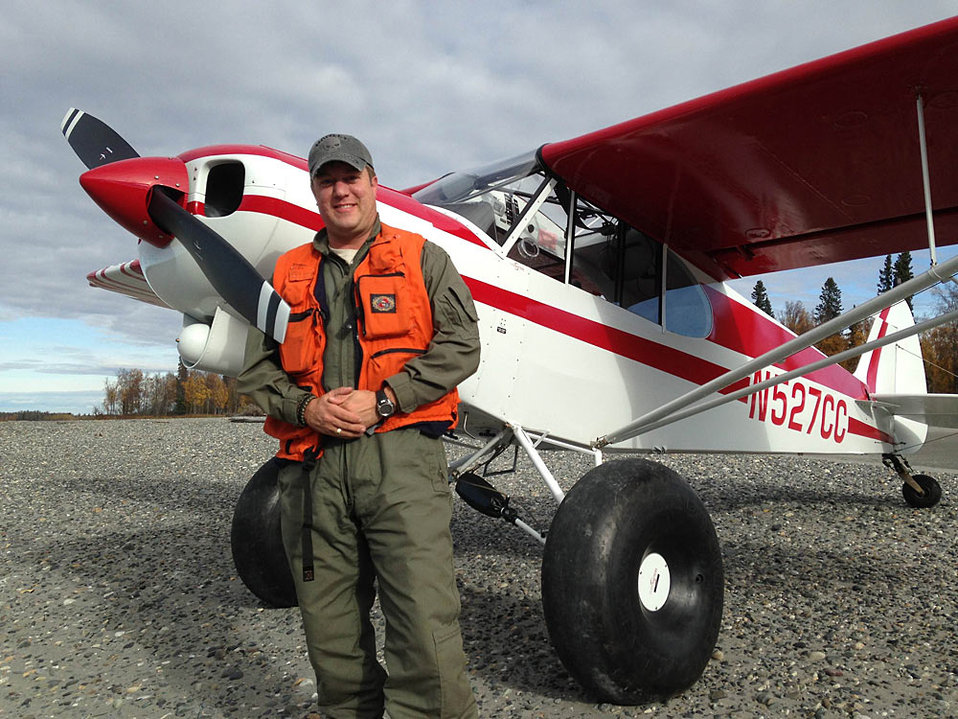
Andrew Flack-Alaska Region

Andy Flack, is a Federal Wildlife Officer and Pilot at Kanuti National Wildlife Refuge in Alaska. He served in the Marines.